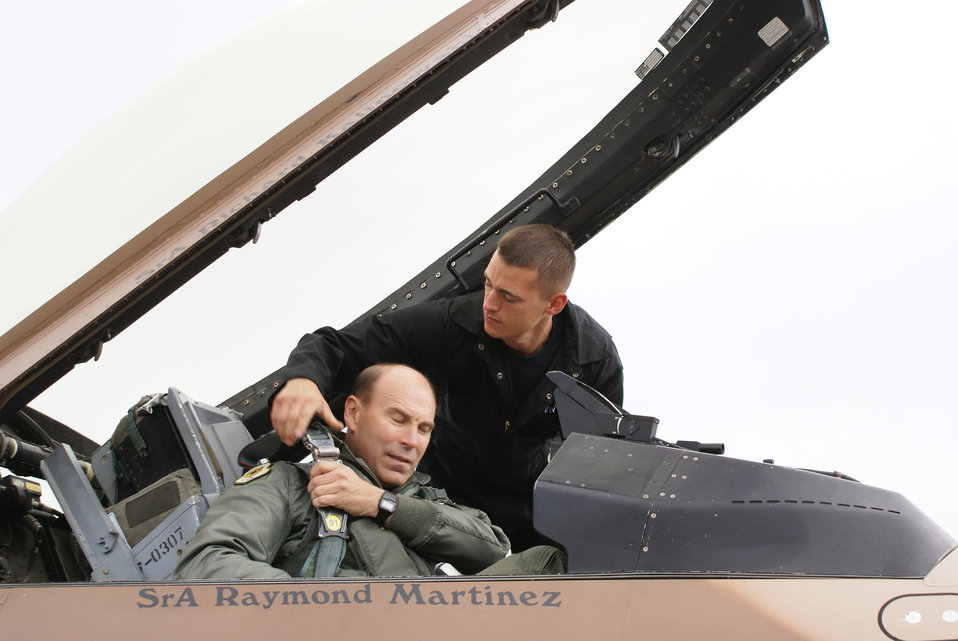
Pilots get taste of combat during Red Flag-Alaska

Senior Airman Richard Kalinowski, 57th Aircraft Maintenance Squadron crew chief, helps buckle Brig. Gen. William Rew, 57th Wing commander of Nellis Air Force Base, Nev., during Red Flag-Alaska June 7. General Rew flew as an aggressor during Red Flag-Alaska 07-2. The exercise is designed to give young pilots and aircrew their first 10 combat sorties using the walk-crawl-run approach, stepping up the level of threat and level of difficulty.